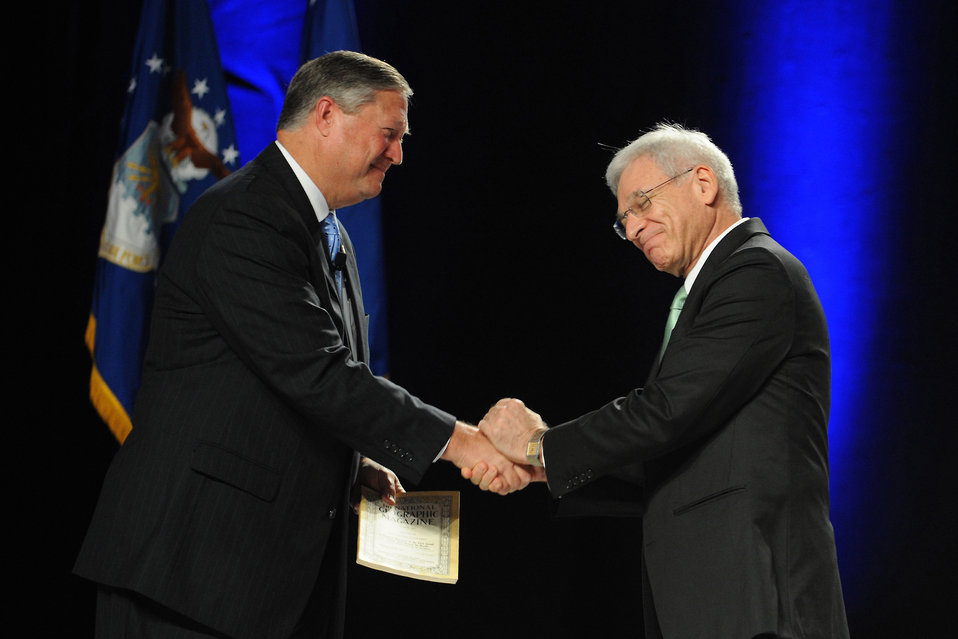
SecAF addresses AFA

Secretary of the Air Force Michael Donley receives the March 1926 National Geographic Magazine following his address during the Annual Air Force Association's Air and Space Conference and Technology Exposition in Washington, D.C., on September 12, 2012.